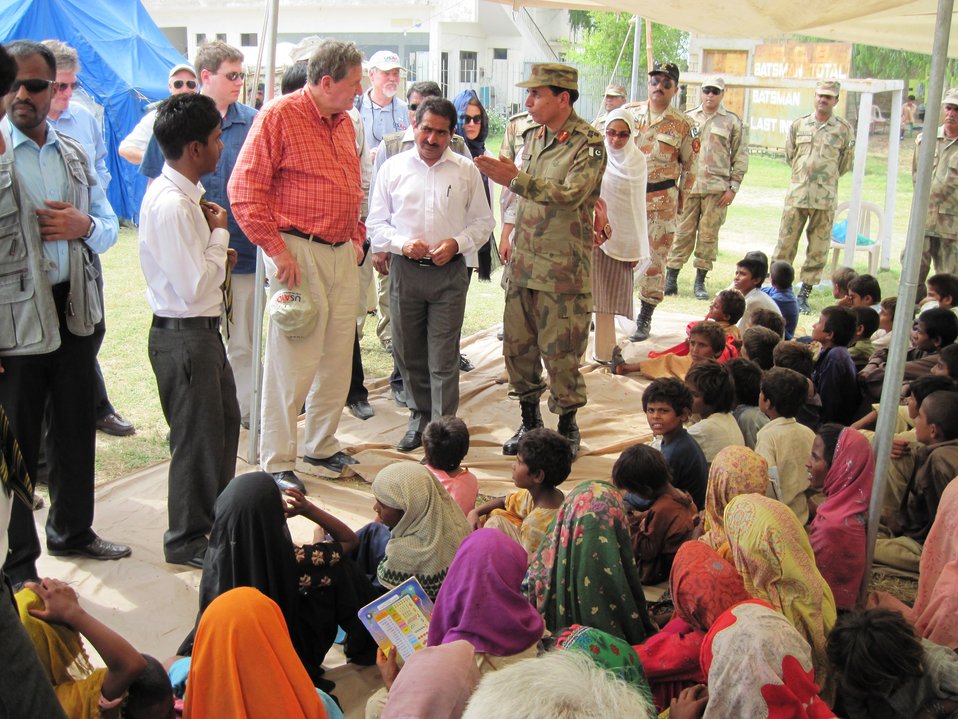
Special Representative Holbrooke With Pakistani Brigadier Mehmood and Thatta DCO Manzoor Ali Shaikh Visits the Makli Cricket Stadium Army IDP Camp

U.S. Special Representative to Afghanistan and Pakistan Richard C. Holbrooke, with Pakistani Brigadier Mehmood and Thatta District Coordination Officer (DCO) Manzoor Ali Shaikh, visits the Makli Cricket Stadium Army IDP Camp in Thatta, Pakistan.